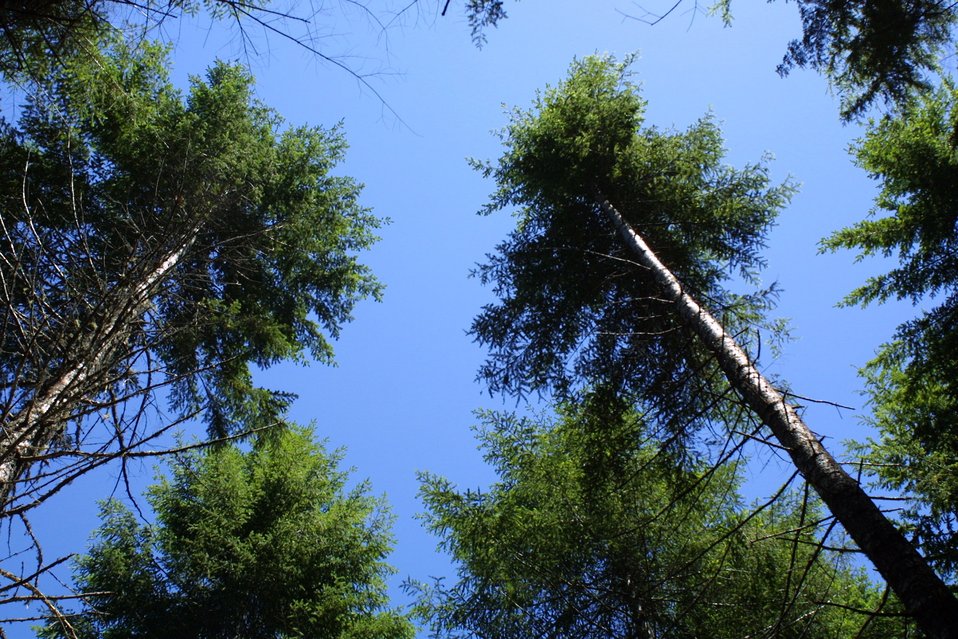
Camas East Timber Sale in Late Successional Reserve.